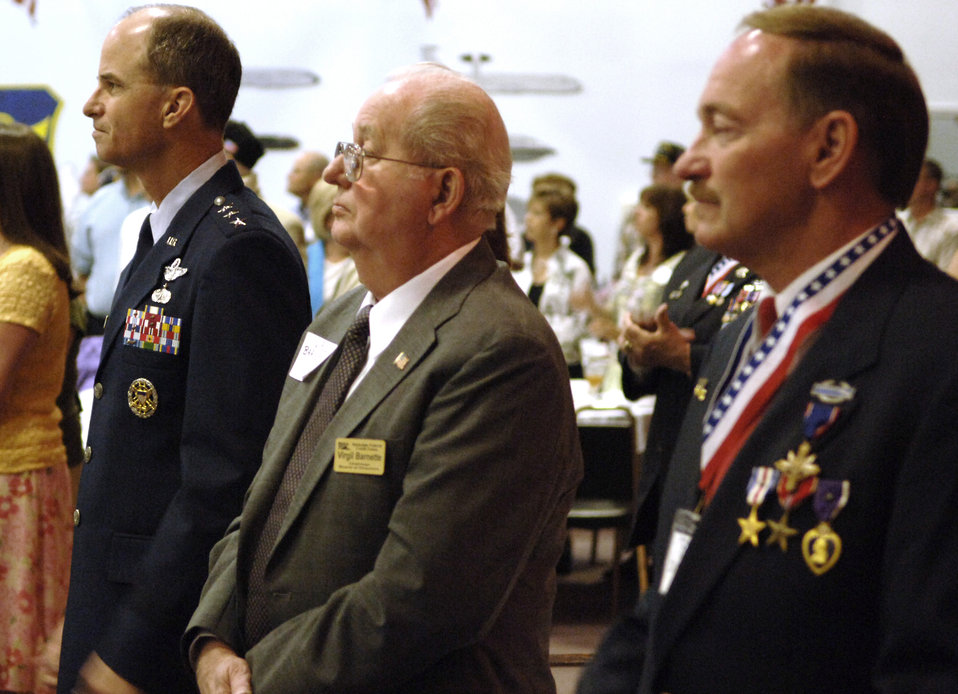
In their honor

(From left) Lt. Gen. Kevin P. Chilton, retired Chief Master Sgt. Virgil Barnett and retired Army Maj. Ron Chatelain stand in honor of the 82 former prisoners of war and 250 Purple Heart recipients at the 2006 Former POW/Purple Heart Luncheon at Barksdale Air Force Base, La, on Saturday, May 20, 2006. General Chilton, 8th Air Force commander, was the keynote speaker.